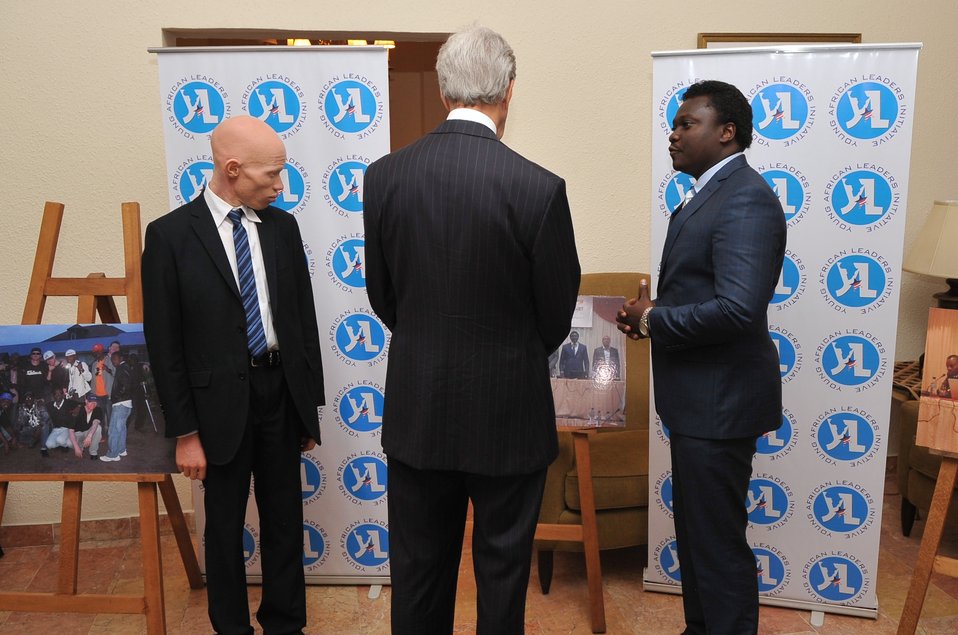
Secretary Kerry Meets With Members of Young African Leaders Initiative

U.S. Secretary of State John Kerry chats with two member of President Obama's Young African Leaders Initiative during a meeting in Kinshasa, Democratic Republic of Congo, on May 3, 2014.